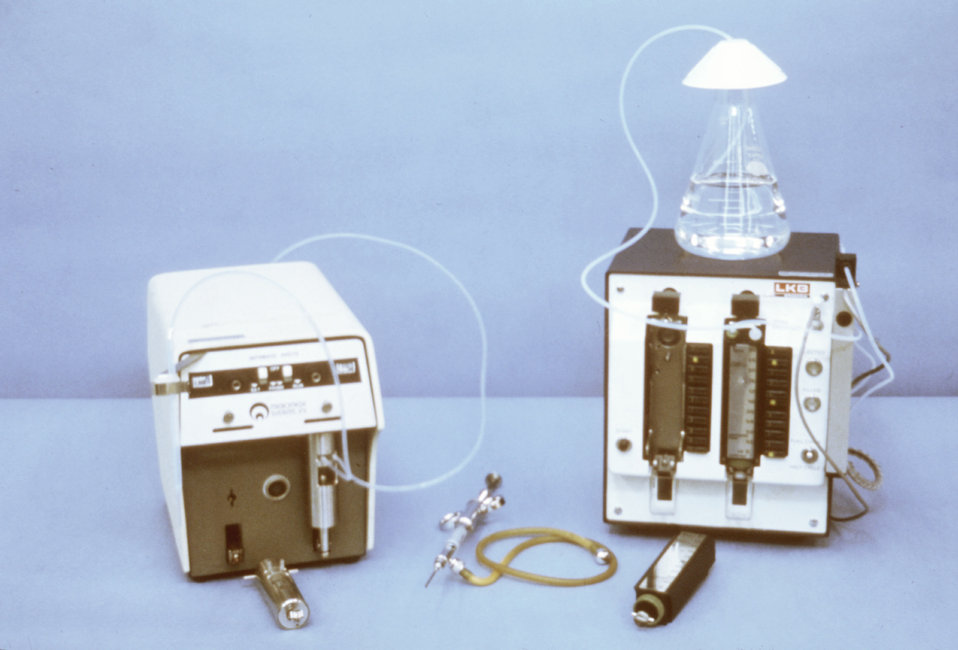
This 1977 photograph depicts the LKB, Micromedic, and Cornwall liquid dispensers.